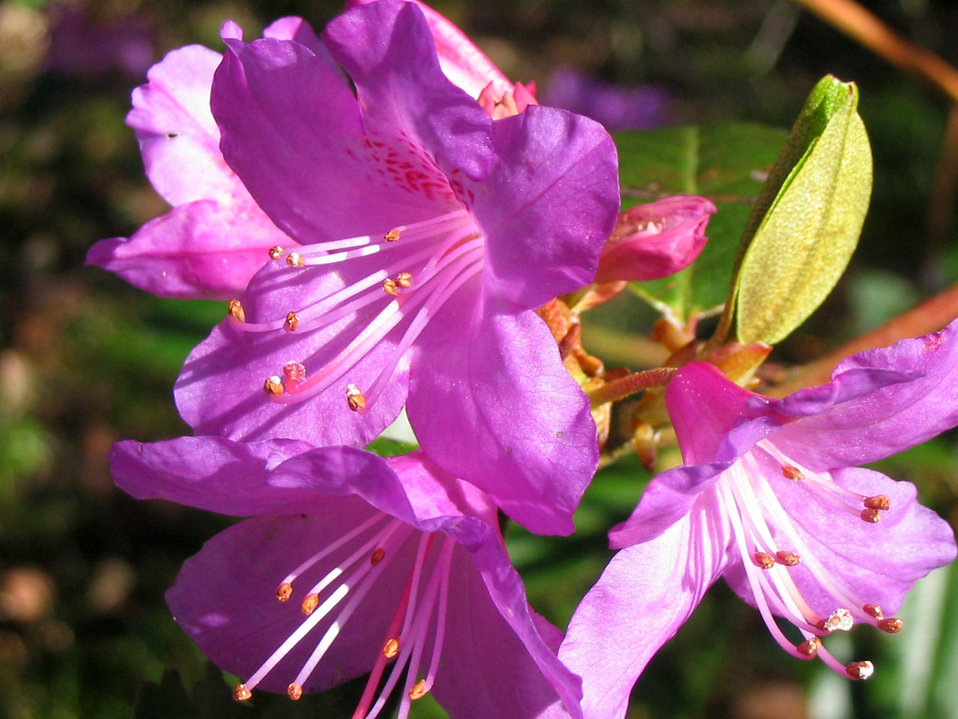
Rhododendron flower

Pink rhododendron flower.